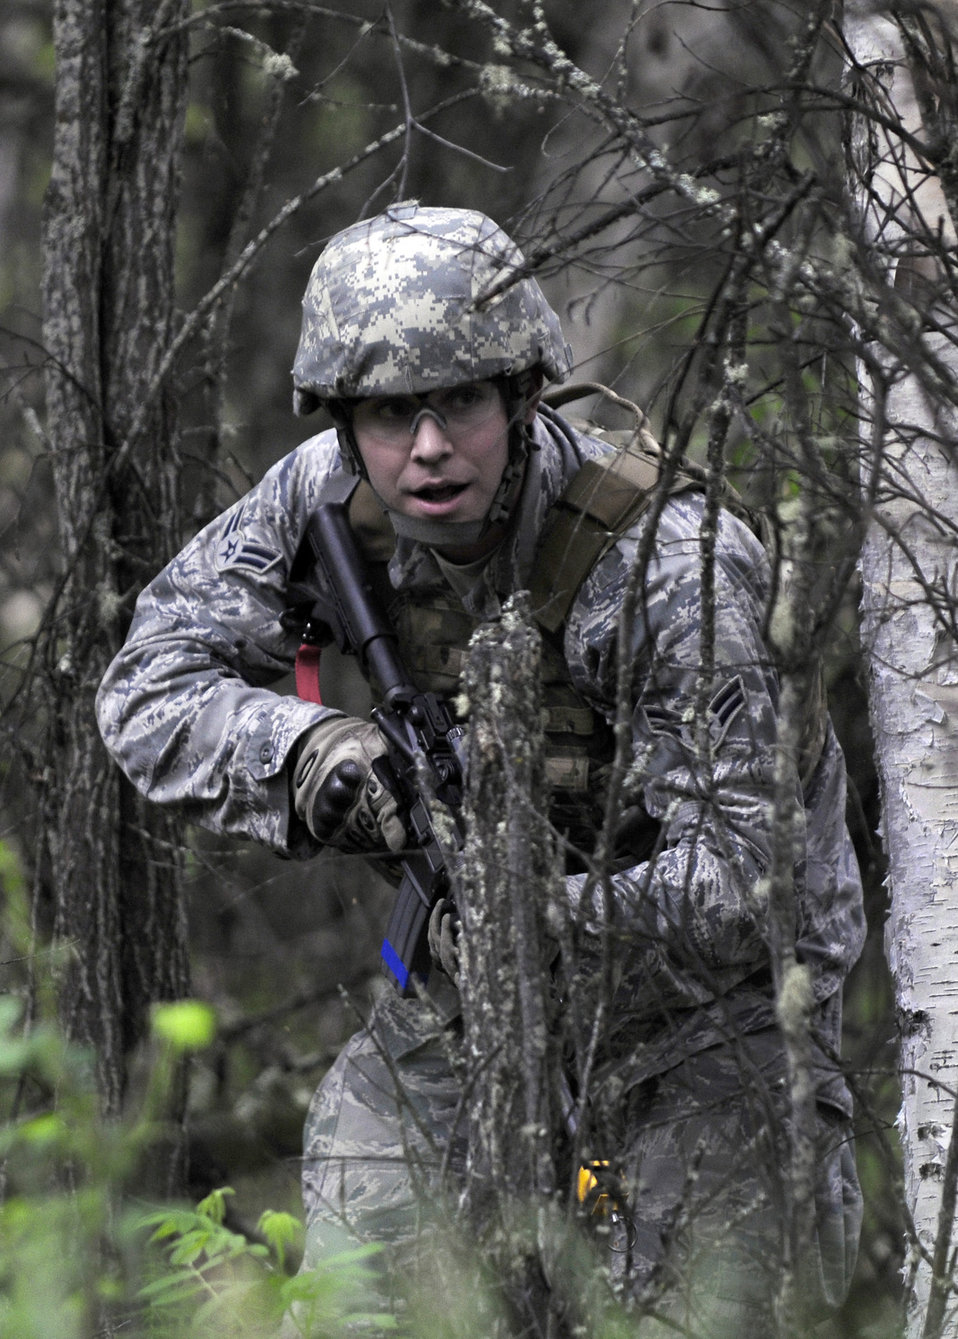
Dismounted patrol preparedness exercise

Airman 1st Class Jordan Burger prepares to